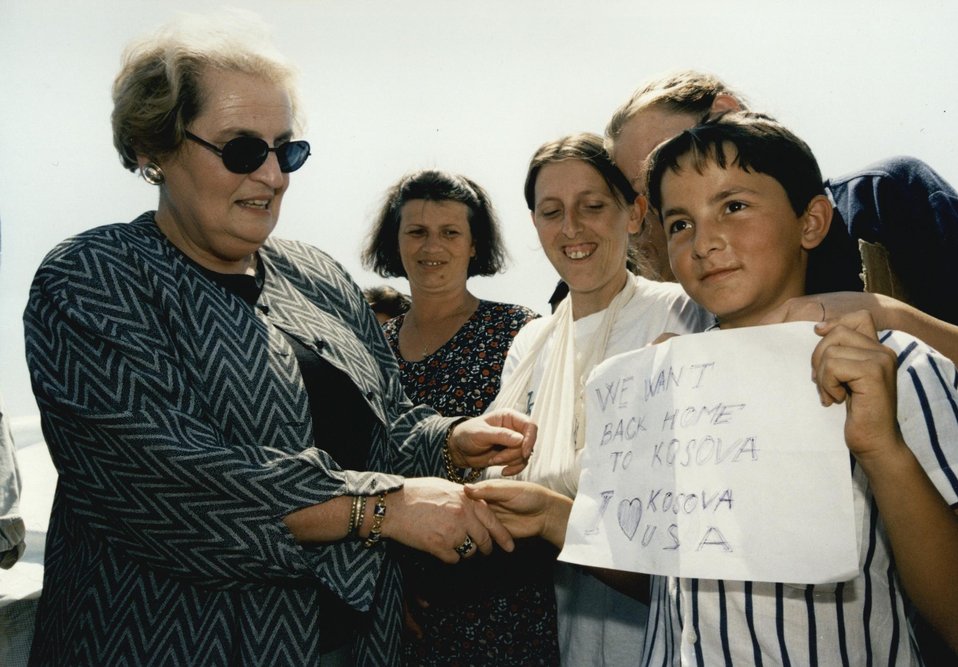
U.S. Secretary of State Madeleine Albright greets boy holding sign that reads: 'We want back home to Kosova.'